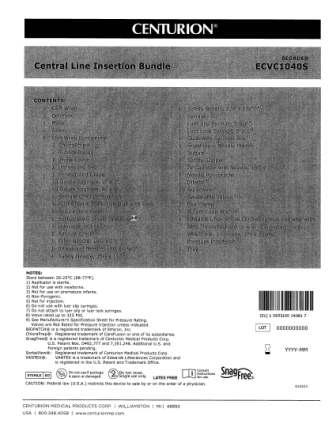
RECALLED - Convenience kits which contain bacteriostatic sodium chloride solution by American Regent

April 1, 2011 - Product Recall - Centurion Medical Products Initiates Voluntary Recall of Customized Convenience Kits (including select Central Venous Catheter, PICC Insertion, and VAD Trays) that contain American Regent’s Bacteriostatic Sodium Chloride Injection, USP, 0.9% 30 mL Multiple Dose Vials.